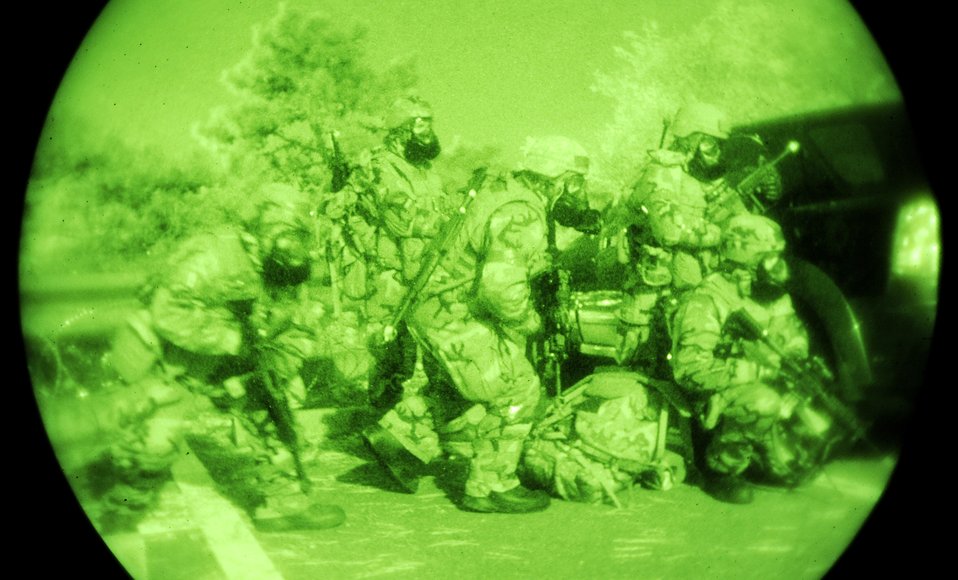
Night exercise at Osan Air Base

Airmen from the 51st Security Forces Squadron gather to fight